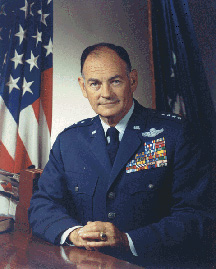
General George S. Brown

1970's -- George S. Brown became the first Air Force chief of staff since Gen. Nathan Twining to hold the position of chairman of the Joint Chiefs of Staff.